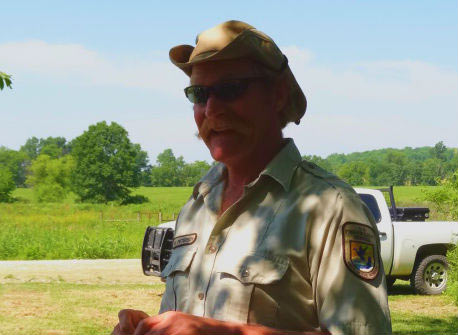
Bill Peterson-Mountain-Prairie Region

Marais des Cygnes National Wildlife Refuge employee Bill Peterson served in the Coast Guard.